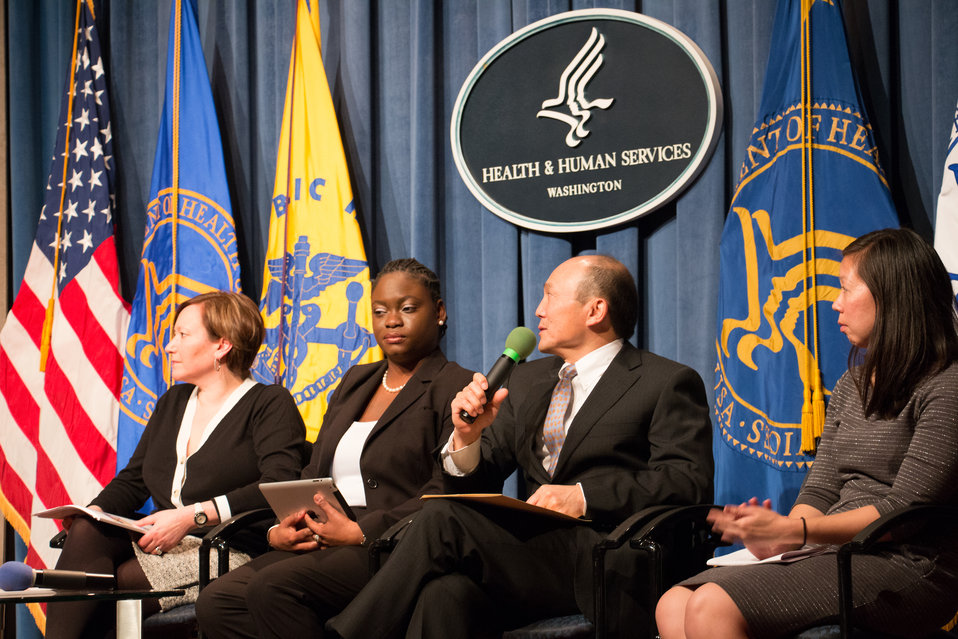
VHAP Launch (307 of 511)